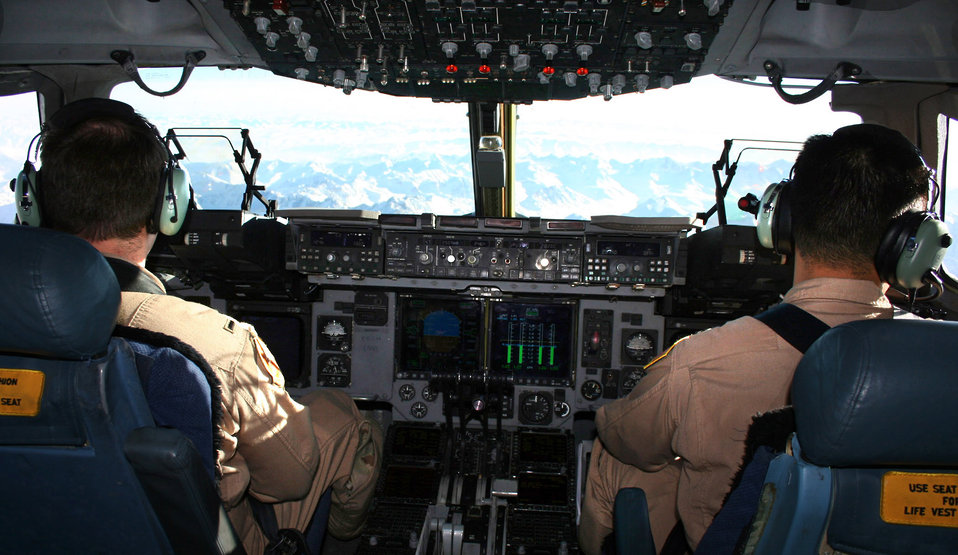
C-17 crews deliver in Central Asia

First Lt. Scot Zicarelli and Capt. Sang Kim lift off from Manas Air Base, Kyrgyzstan, in a C-17 Globemaster III over the Tien Shan Mountains with a load of cargo for Bagram Air Base, Afghanistan. Temporarily assigned to the 817th Expeditionary Airlift Squadron, the pilots are deployed from McChord Air Force Base, Wash.